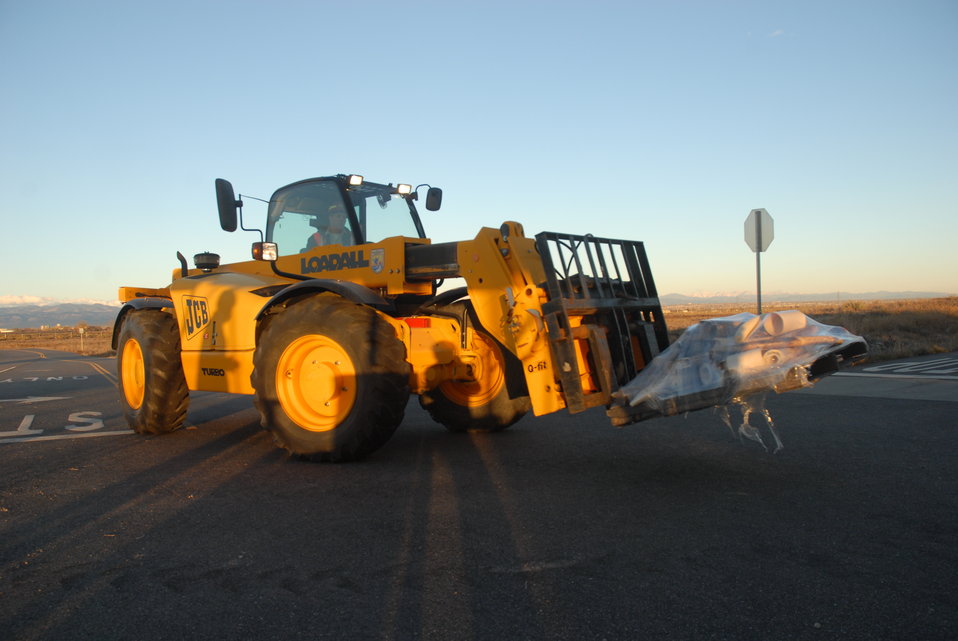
Before sunrise crews began loading ivory which FWS seized during undercover investigations of organized smuggling operations or confiscating at the U.S. border over the past 25 years.